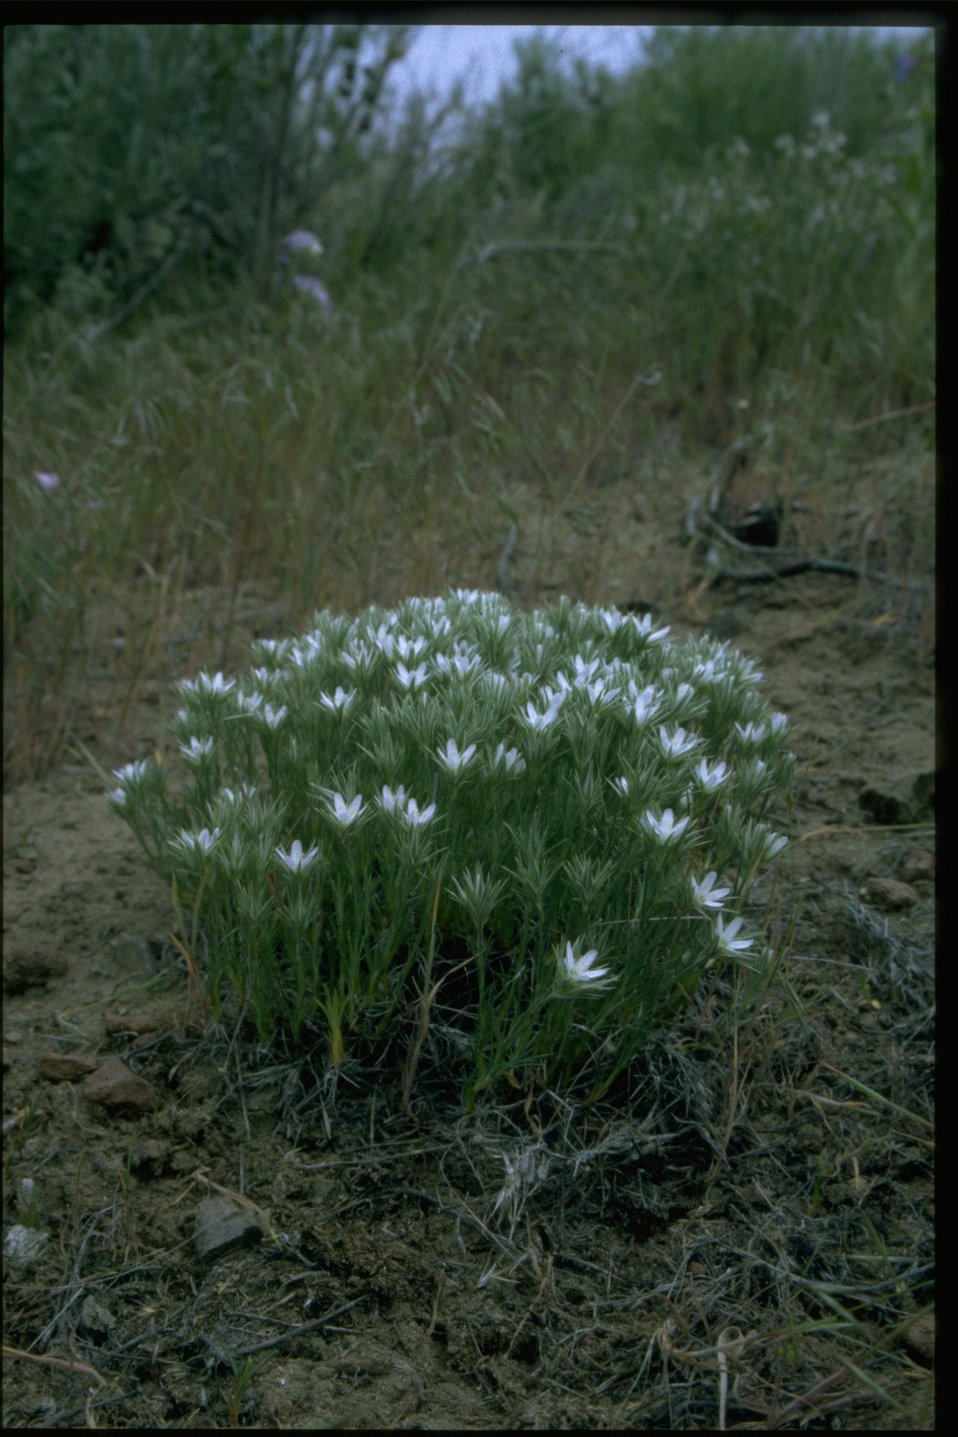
Shot of Franklin's sandwort (Arenaria franklinii) habitat.